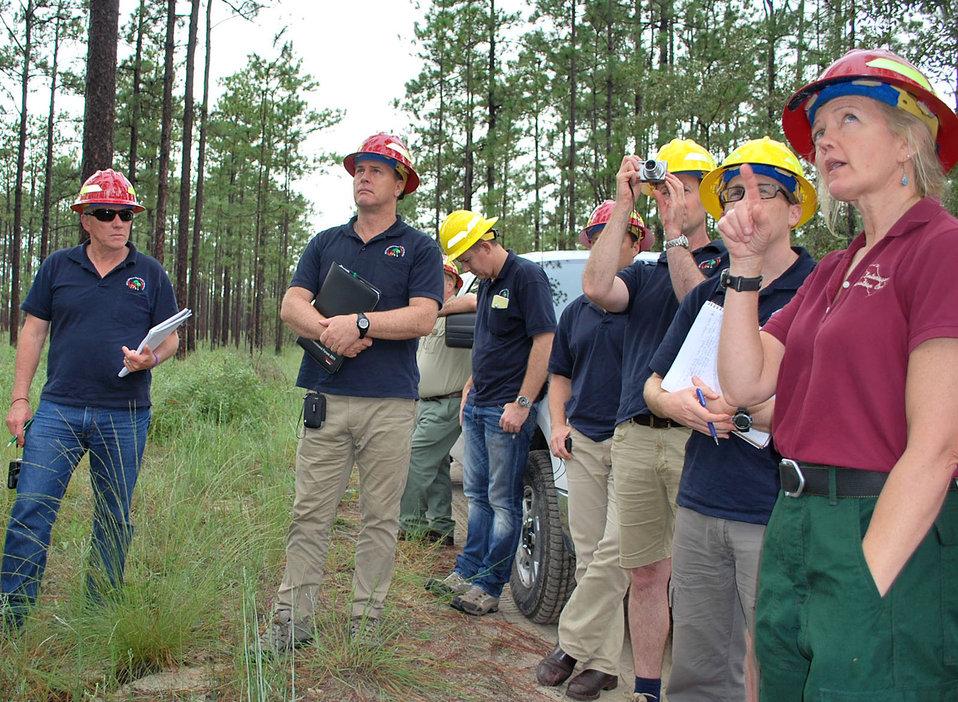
App fire exchDec

Debbie Casto, Forest Service fire management officer for the National Forests in Florida, discusses the precautions taken before conducting a prescribed burn near threatened and endangered species sites on the Apalachicola National Forest. The forest is home to several endangered species such as the red-cockaded woodpecker.